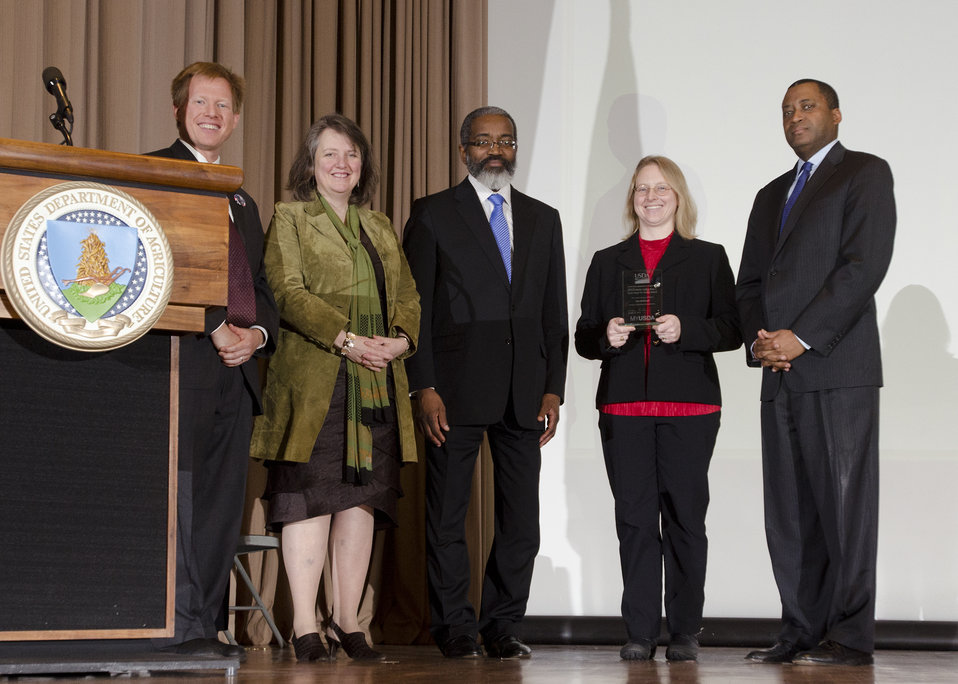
U.S. Department of Agriculture (USDA) Agricultural Research Service (ARS) Animal Scientist from West Lafayette, IN Kim McMunn receives the Dr. Martin Luther King, Jr. National Service Day Drum Major Service Award at the USDA Jefferson Auditorium in Washington, D.C. on Tuesday, Jan. 15, 2013. (L to R, Agriculture Director Faith Based and Neighborhood Partnerships Max Finberg, Agriculture Deputy Secretary Kathleen Merrigan, USDA Acting Assistant Secretary for Administration Dr. Gregory Parham, Kim McMunn, and Agriculture Assistant Secretary for Civil Rights Dr. Joe Leonard).